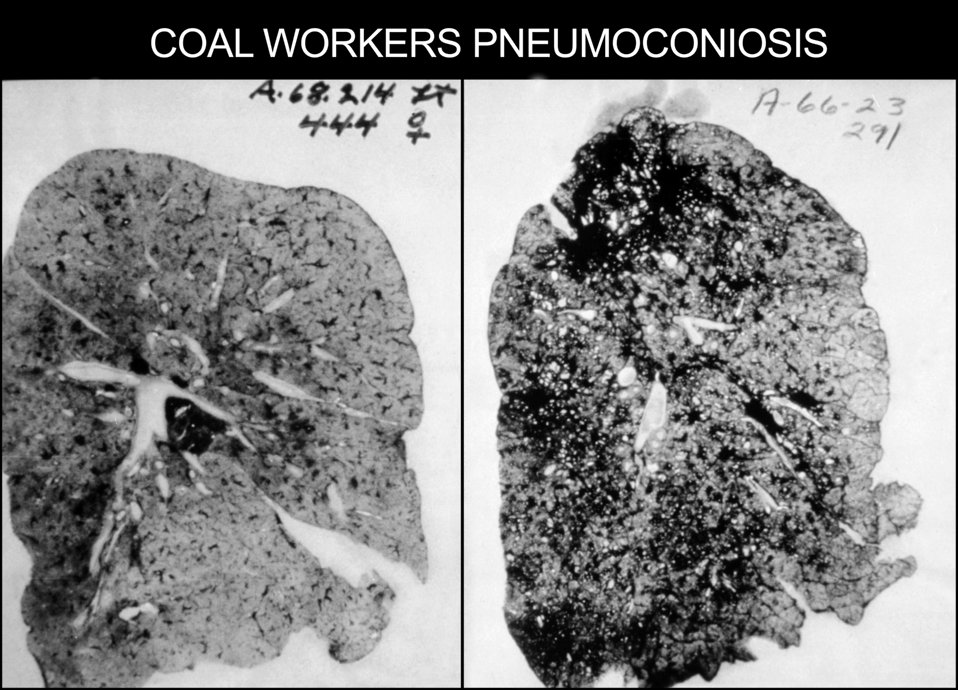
This occupational health image shows the lungs of a coal worker with Pneumoconiosis, or Black Lung Disease.